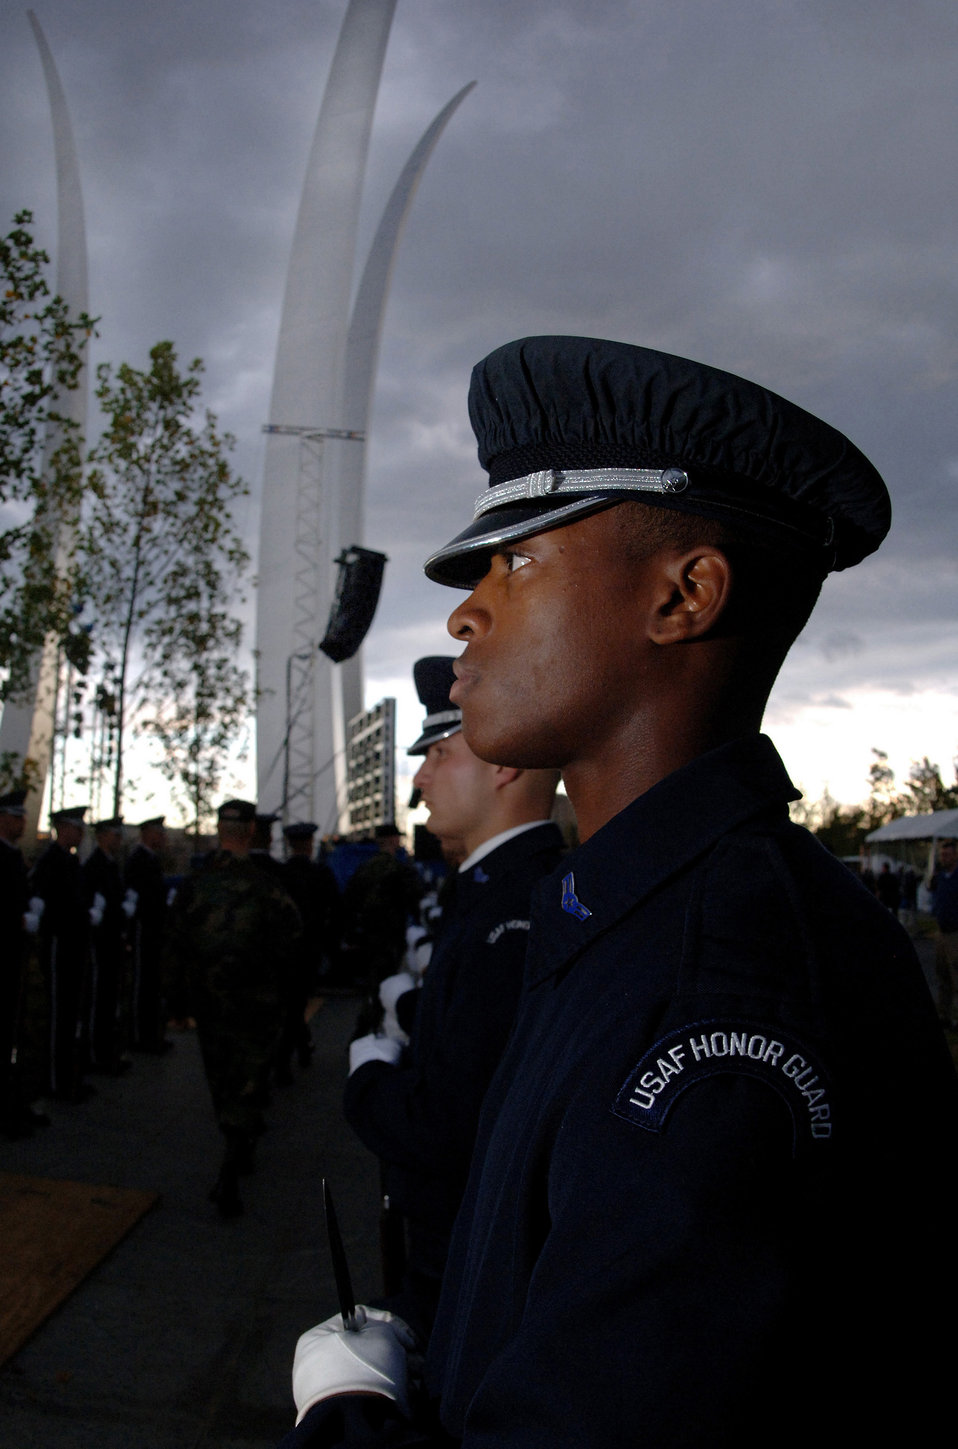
Memorial dedication to launch AF's 60th Anniversary observance

The Air Force Honor Guard's Airman 1st Class Jerome Whitfield practices at the Air Force Memorial in Arlington, Va., Oct. 12. The memorial's dedication ceremony kicks off at 9 a.m. Oct. 14 as organizers continue making final preparations.